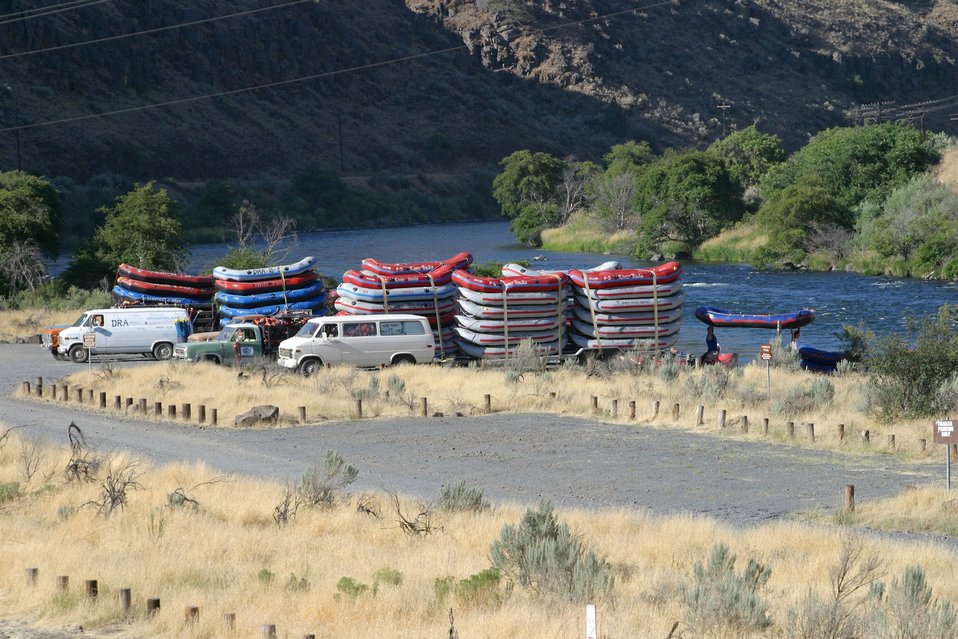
Commercial Raft companies arrive early at Harpham Flat boat ramp to prepare their clients.